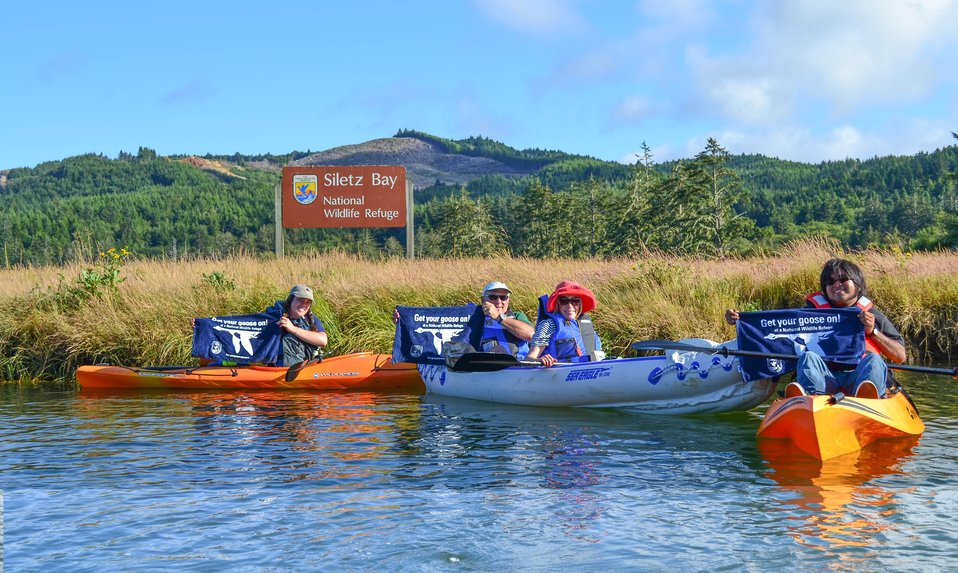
Get Your Goose On! at Siletz Bay NWR

Paddlers love Oregon's scenic estuaries. GYGO! in Siletz Bay!